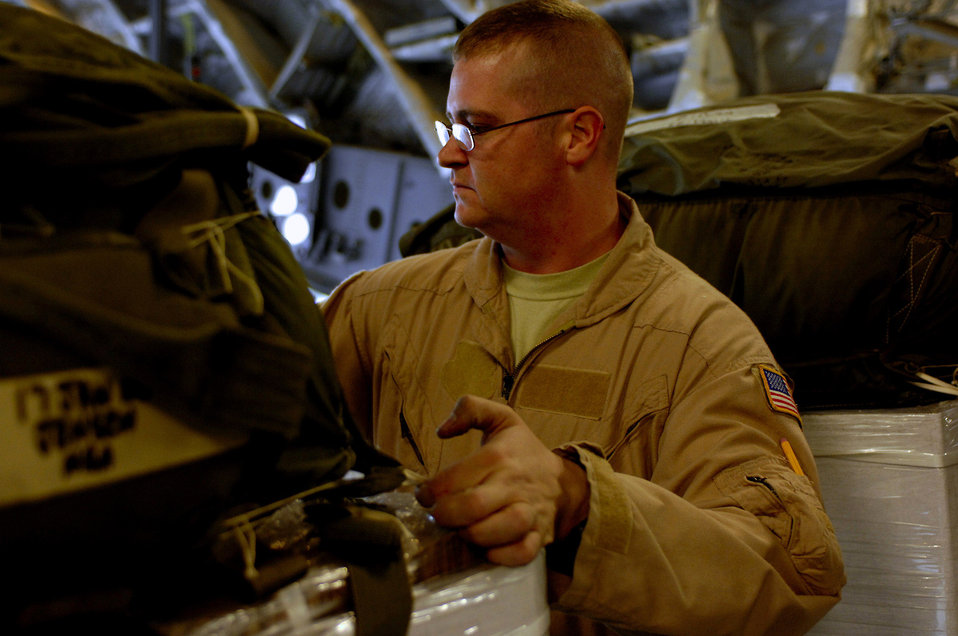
Afghanistan airdrop

Tech. Sgt. Michael Gillan inspects the bundles for the container deliver system on a C-17 Globemaster III for a Joint Precision Airdrop Delivery System of 40 bundles of humanitarian supplies to a drop zone April 13 in Afghanistan. Sergeant Gillan is a loadmaster from the 17th Airlift Squadron from Charleston Air Force Base S.C., and is deployed to the 816th Expeditionary Airlift Squadron in Southwest Asia.